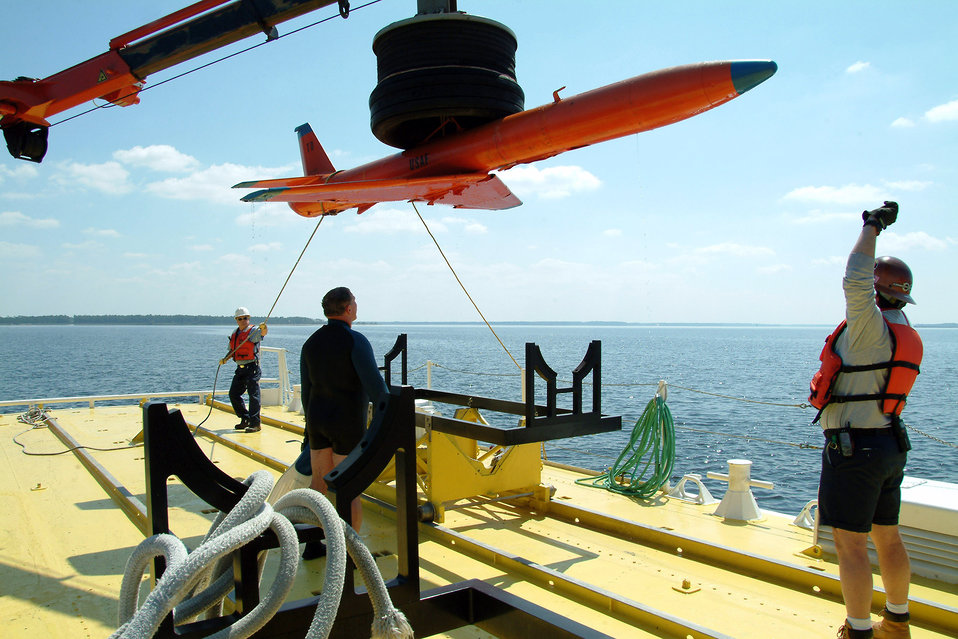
Air Force's navy

Byron Howle keeps the drone model steady with a rope as John Wise (right) directs the crane movements to lower it on to the drone cradle during a recovery demonstration March 26 in the waters off of Tyndall Air Force Base, Fla. The ship is one of three 120-foot boats owned by the Air Force. They are contracted from through the 82nd Aerial Targets Squadron to help recover sub-scale drones after they are shot down during live-fire exercises.